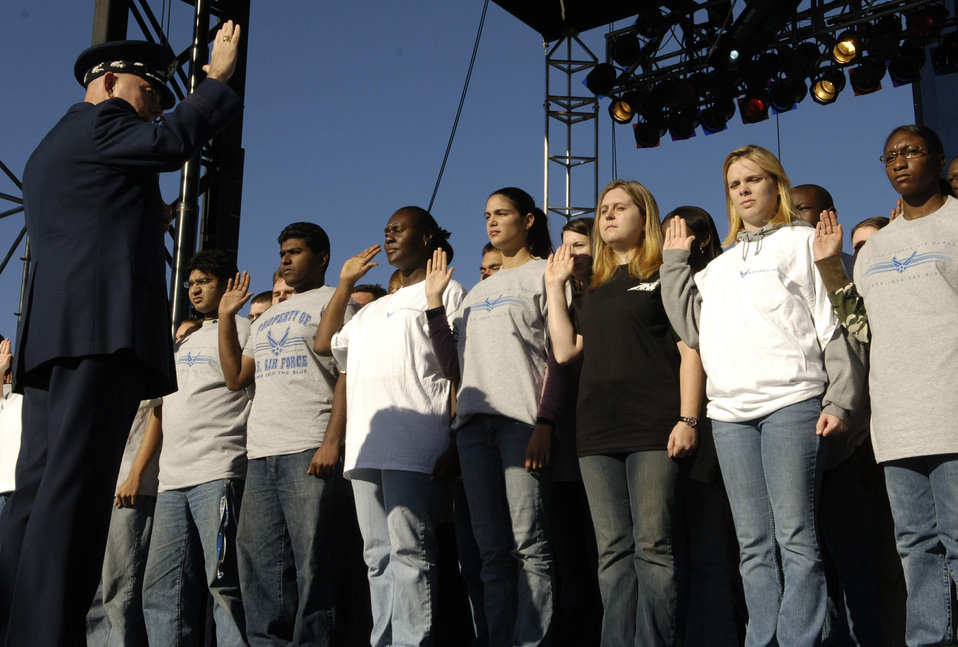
Induction ceremony at Air Force Memorial

Air Force Chief of Staff Gen. T. Michael Moseley inducts 90 young men and women into the U.S. Air Force on Saturday, Oct. 14, 2006, during open house activities at the Pentagon prior to the official dedication ceremony of the Air Force Memorial. President George W. Bush will join Senior Defense Dept. and Air Force officials in a ceremony to present the memorial to the Nation. Desiged by the late James Ingo Freed the memorial with its three soaring spires inspired by the U.S. Air Force Thunderbirds bomb burst manuever, pays tribute to and honors the patriotic men and women of the U.S. Air Force and its predeccessor organizations. An open house will run near the Pentagon in conjunction with the dedication ceremony which will feature performances by the U.S. Air Force Band, the U.S. Air Force Honor Guard drill team, and will culminate with a concert featuring country music performer LeeAnn Womack.